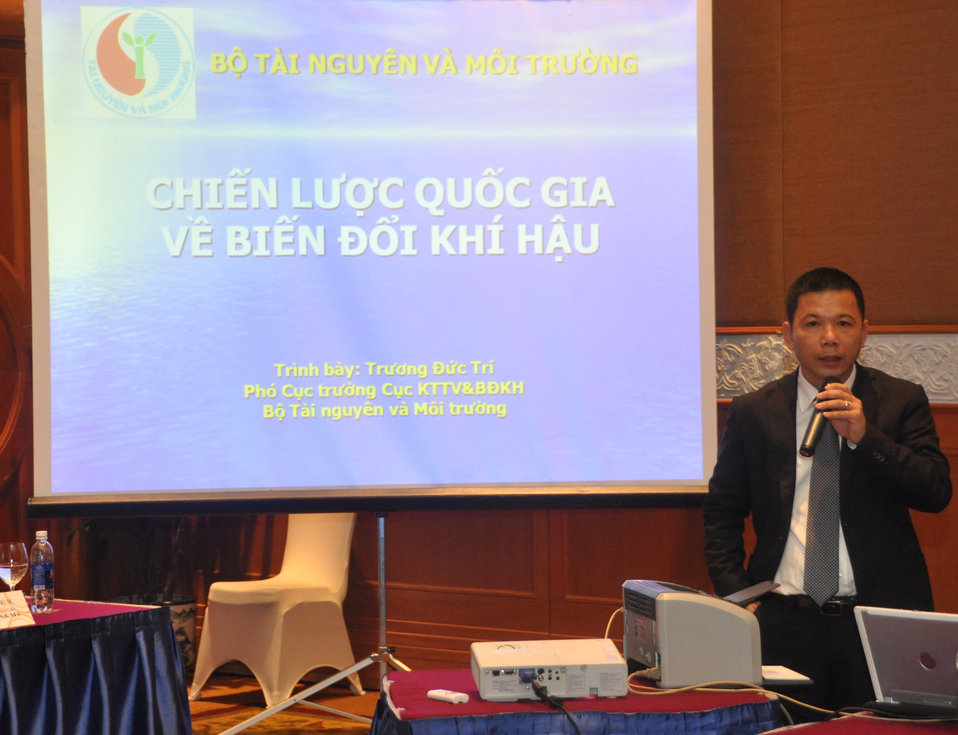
Mr. Truong Duc Tri, Deputy Director of the Department of Meterology and Hydrology and Climate Change, Vietnam's Ministry of Natural Resources and Enivronment